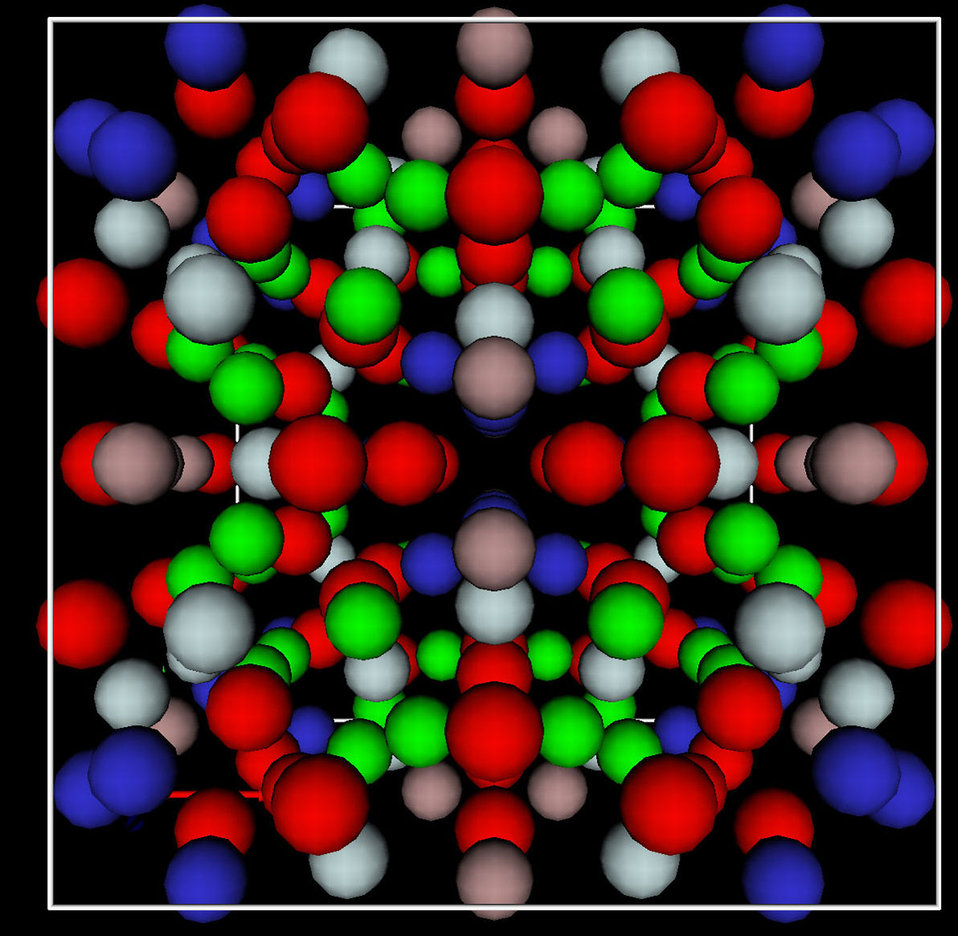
Crystal Structure Library Gets a 'Data Lift'

Data from the NIST Structural Database can be imported into a VRML player to allow views of a compound's structure from a wide range of angles. Shown is the crystal structure for a material containing aluminum, copper, and lithium.